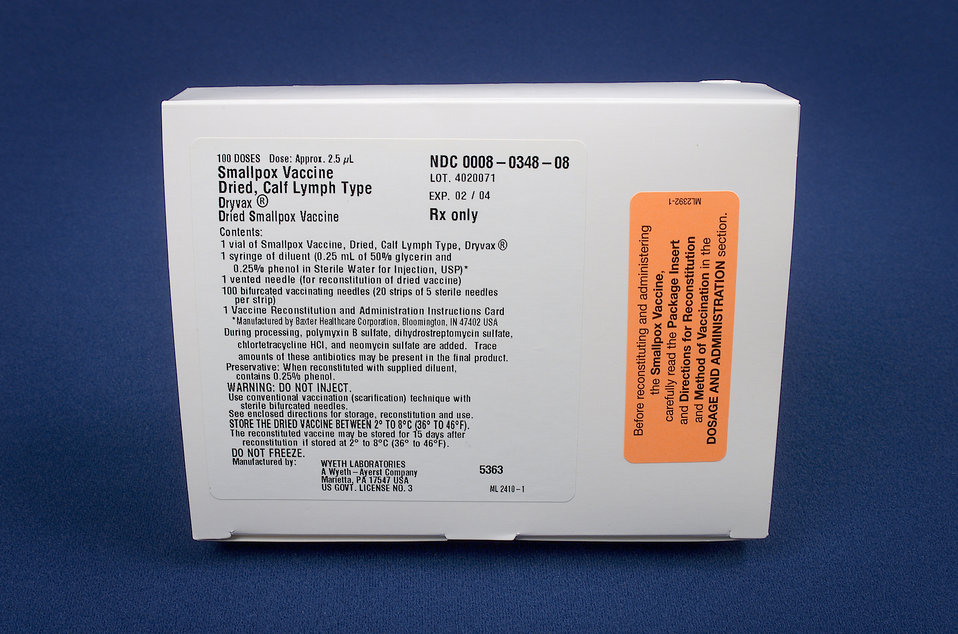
A box containing the diluent and a vial of Dryvax� dried calf lymph type smallpox vaccine.